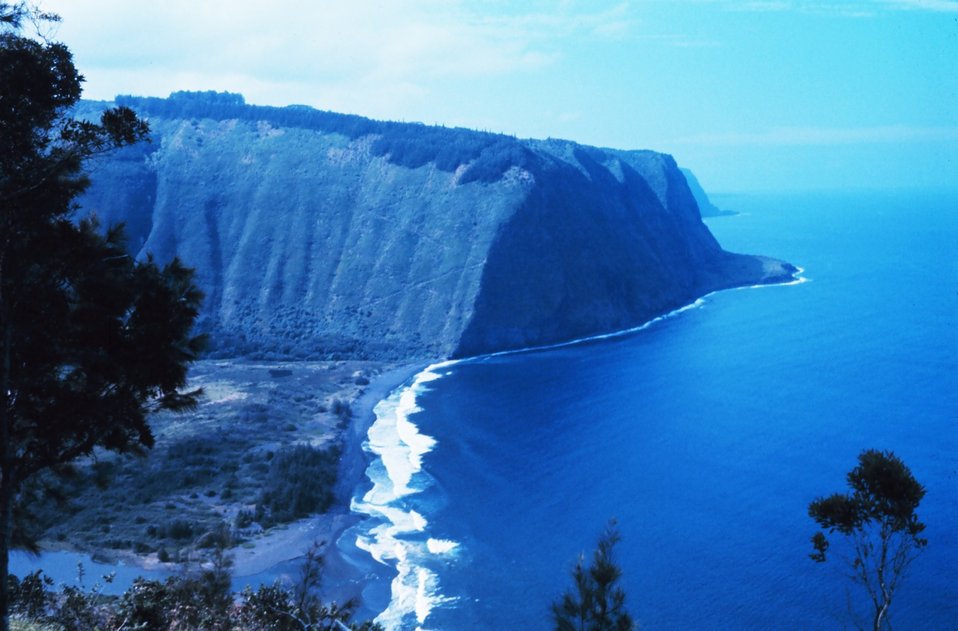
Looking northwest across the Waipio Valley to the Kohala Mountains